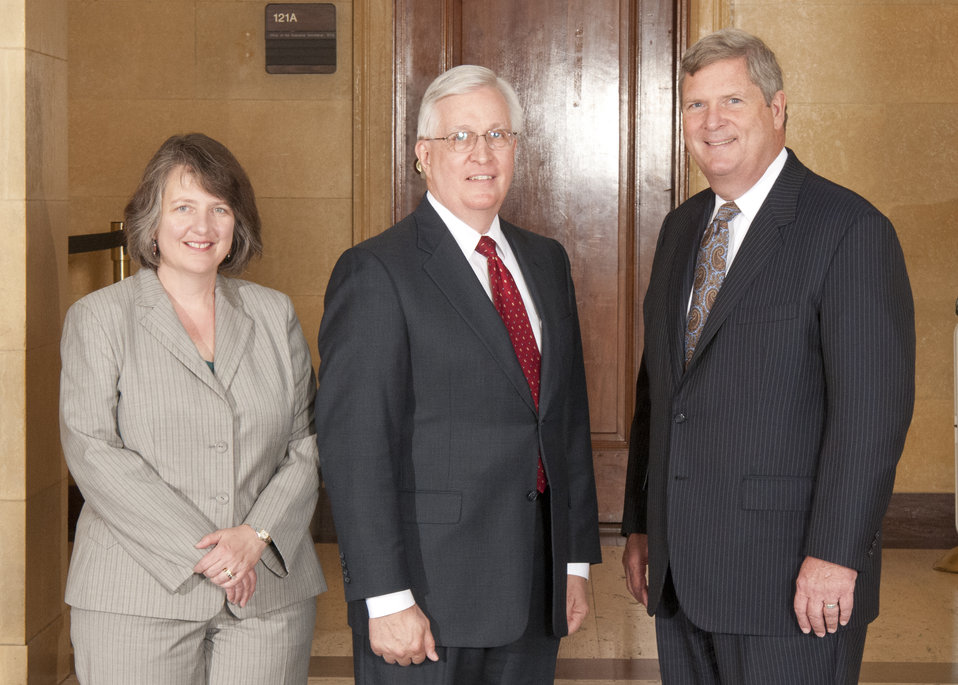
Agriculture Secretary Tom Vilsack and Deputy Agriculture Secretary Kathleen Merrigan with David Funk, Grain Inspection, Packers and Stockyards Administration (GIPSA) during the Honor Award group photography on the patio of the U.S. Department of Agriculture in Washington, D.C. on Wednesday, Sept. 12, 2012.